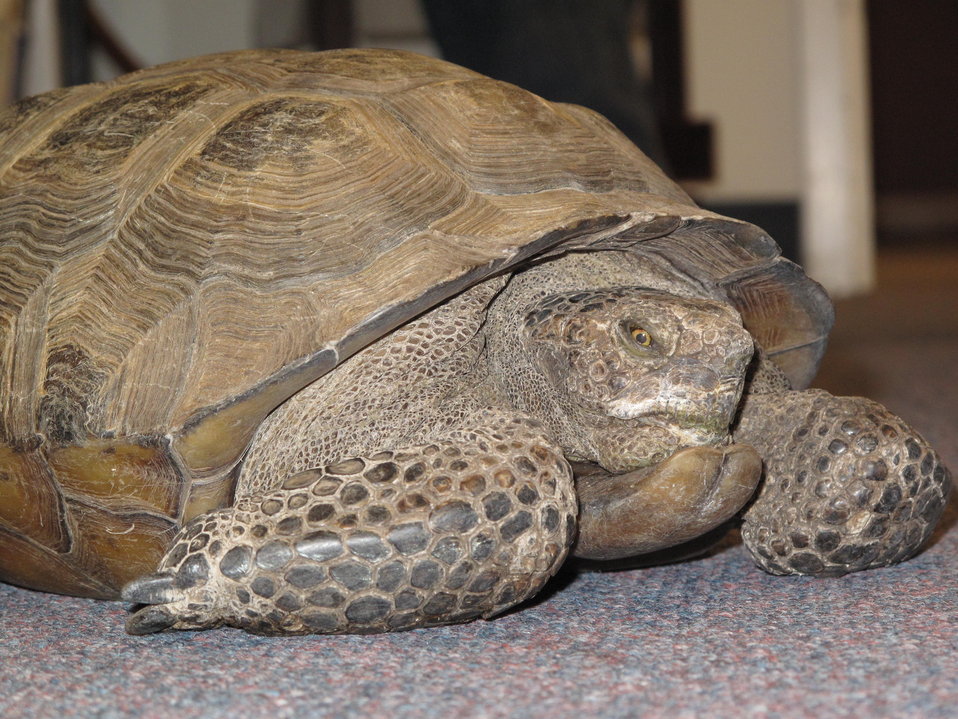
Crush the Desert Tortoise